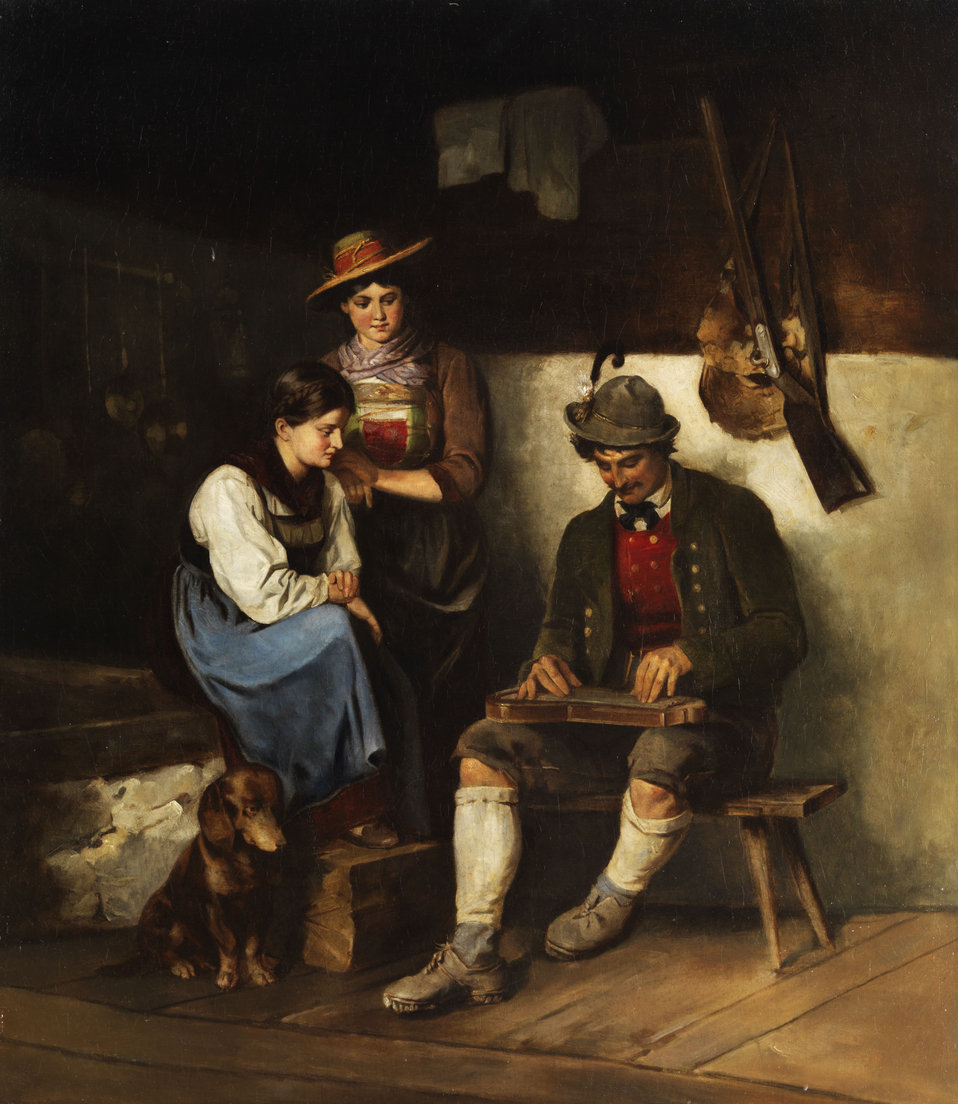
Franz von Defregger Der Zitherspieler 20124